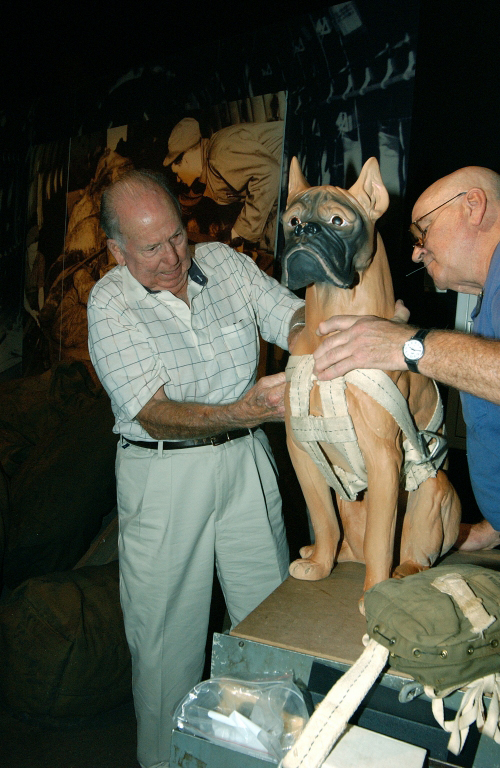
Flying dog's parachute lands at U.S. Air Force Museum

DAYTON, Ohio -- Clarence Steber (left) fastens the parachute he donated to the U.S. Air Force Museum here on the back of a dog mannequin with the help of Jerry Miracle, an exhibits specialist at the museum. Mr. Steber shared the cockpit on 131 flights with his boxer, Vittles, who was required to wear the parachute.